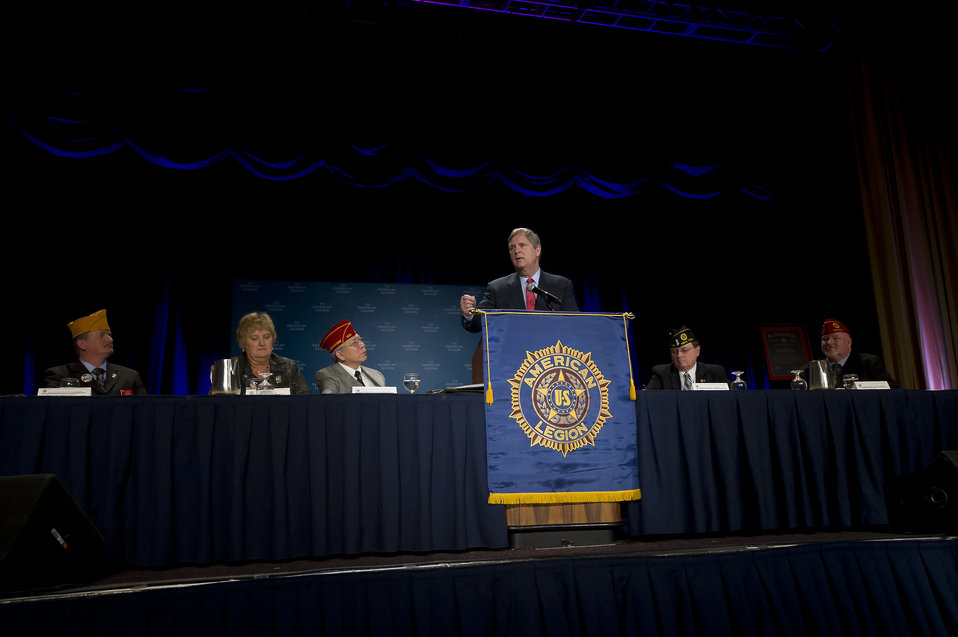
U.S. Secretary of Agriculture Tom Vilsack speaks to the American Legion prior to signing a memorandum of understanding with the American Legion which will help our Nation's veterans and transitioning military service members find positions that promote agriculture, animal and plant health, food safety, nutrition, conservation and rural communities at the Washington Hilton in Washington, D.C., on Tuesday February 28, 2012.